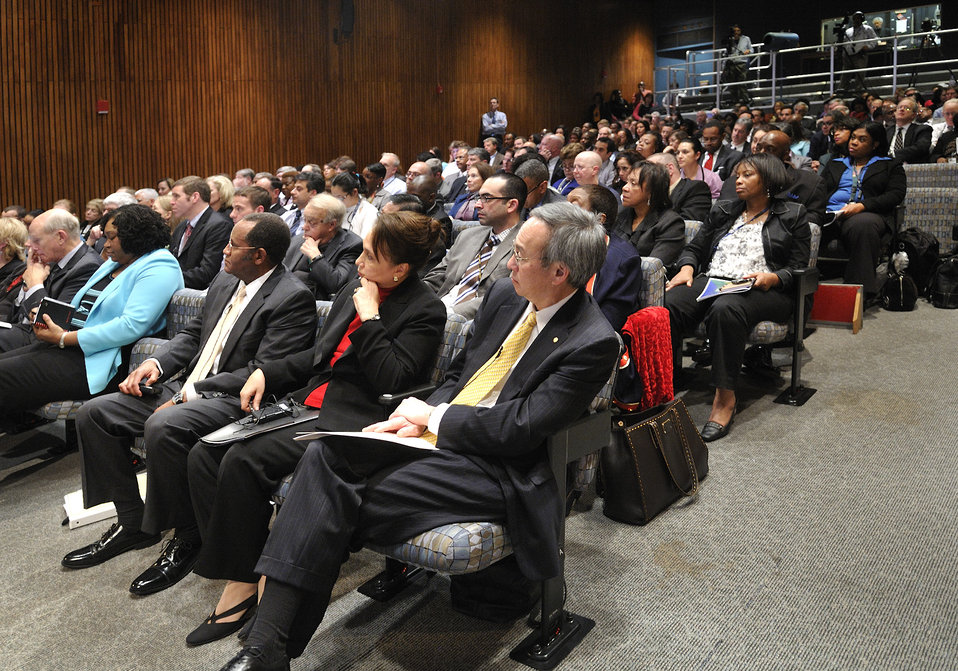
A packed house listens to the Diversity and Inclusion Town Hall.